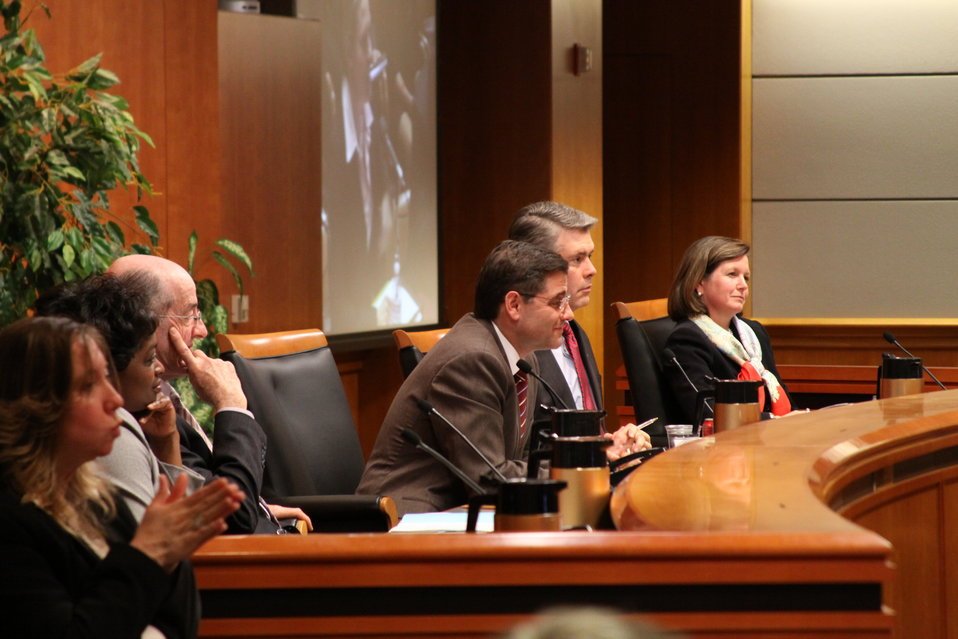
Open Commission Meeting - 2/18/2010

The Federal Communications Commission will hold an Open Meeting in Washington, DC. on February 18, 2010, which will include the following items:

E-Rate: An Order and Notice of Proposed Rulemaking to enable schools that receive funding from the E-Rate program to allow members of the general public to use the schools' Internet access during non-operating hours at no additional cost to the Universal Service Fund. This order and notice do not permit or require any changes to E-Rate applications due on February 11, 2010; Ex Parte Reform: A Notice of Proposed Rulemaking to improve the transparency and effectiveness of the FCC's decision-making process by reforming the ex parte rules; Procedural Reform: A Notice of Proposed Rulemaking to enhance the efficiency, openness, and transparency of the Commission's proceedings by improving and modernizing certain organizational and procedural rules; National Broadband Plan Status Report: Commission staff will report on the status of the National Broadband Plan, providing a framework for the national purposes portion of the Plan.